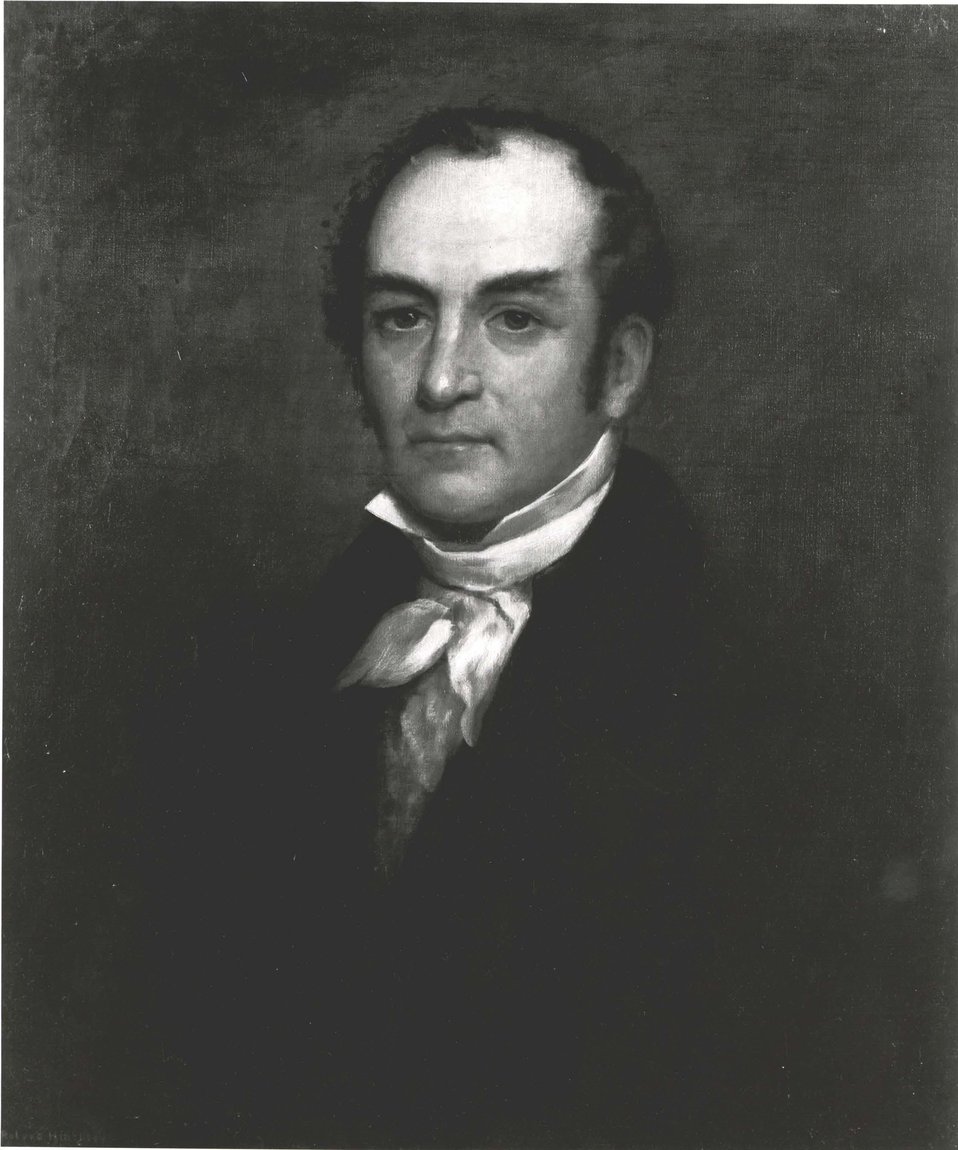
Louis McClane, U.S. Secretary of State, May 29, 1833 to June 30, 1841